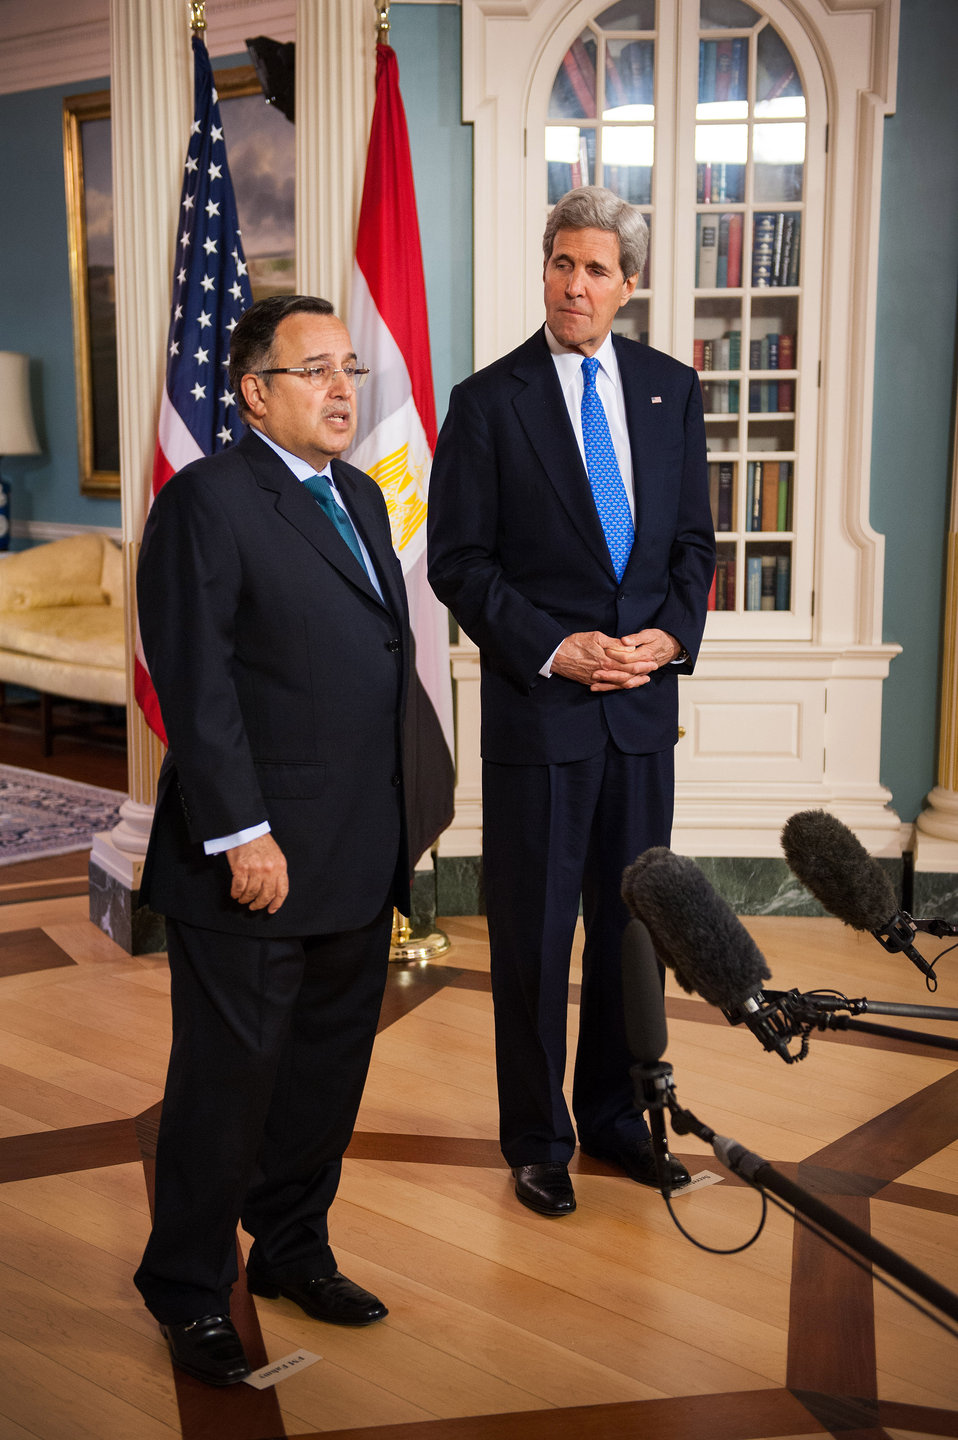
Secretary Kerry and Egyptian Foreign Minister Fahmy Address Reporters

U.S. Secretary of State John Kerry and meets with Egyptian Foreign Minister Nabil Fahmy address reporters before their bilateral meeting at the U.S. Department of State in Washington, D.C., on April 29, 2014.